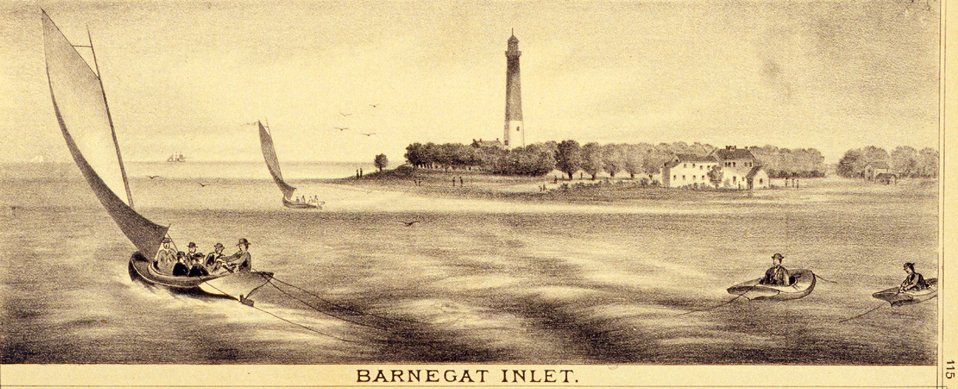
Barnegat Inlet and Lighthouse. P. 115. 'Historical and Biographical Atlas of the New Jersey Coast,' by T. F. Rose, 1878.